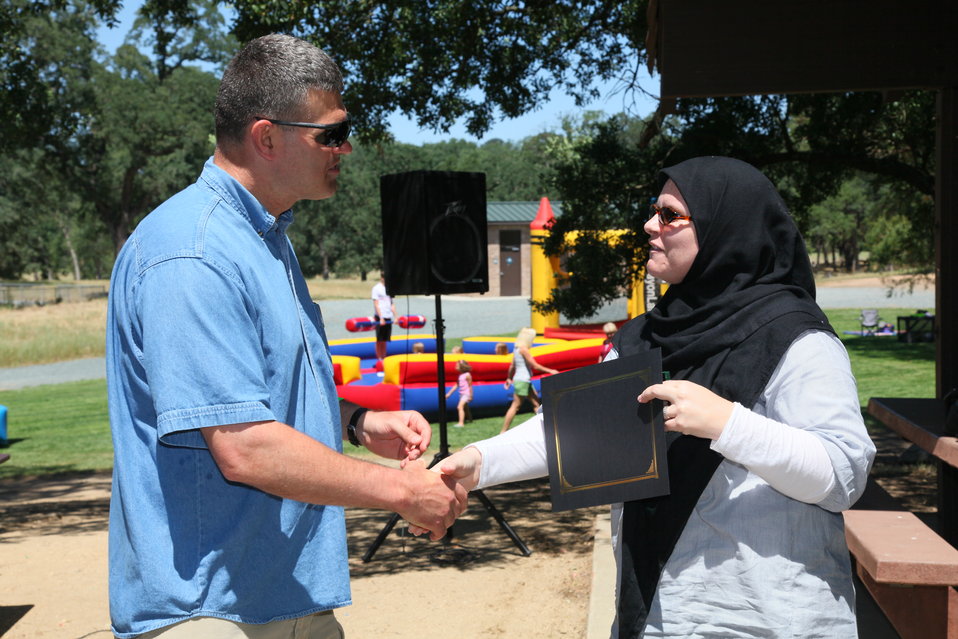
2011 Annual Picnic